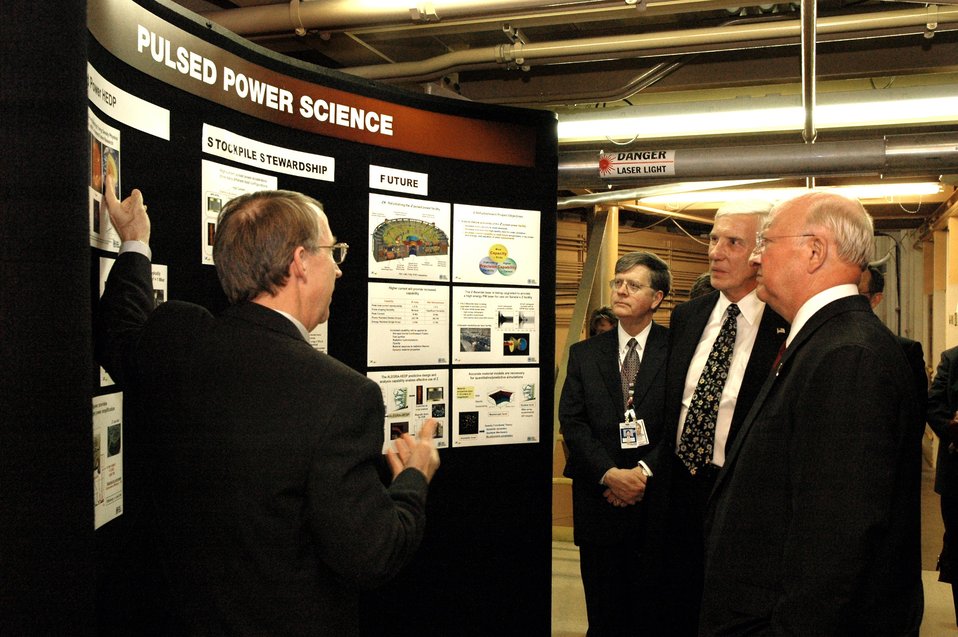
KEITH MATZEN, DIRECTOR OF PULSED POWER SCIENCE AT SANDIA LABS LEADS SECRETARY OF ENERGY BODMAN THROUGH EXHIBIT.

ON FEBRUARY 24, 2005, SECRETARY OF ENERGY SAMUEL BODMAN VISITED SANDIA NATIONAL LABORATORIES. HERE THE SECRETARY AND LAB DIRECTOR PAUL ROBINSON ARE VIEWING AN EXHIBIT ON PULSED POWER, WHILE KEITH MATZEN, DIRECTOR OF PULSED POWER SCIENCE, POINTS OUT HIGHLIGHTS.